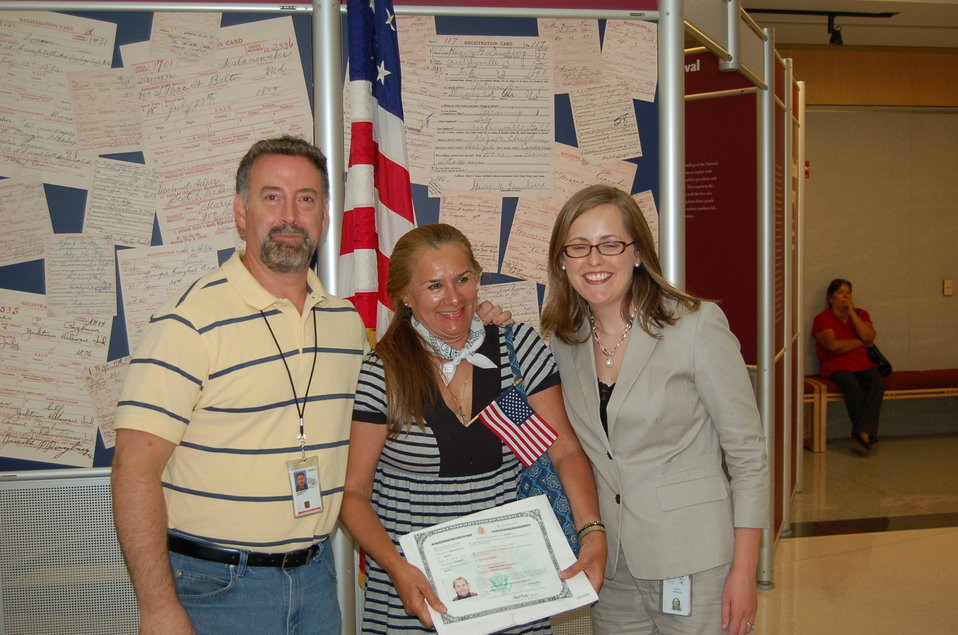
New Citizens